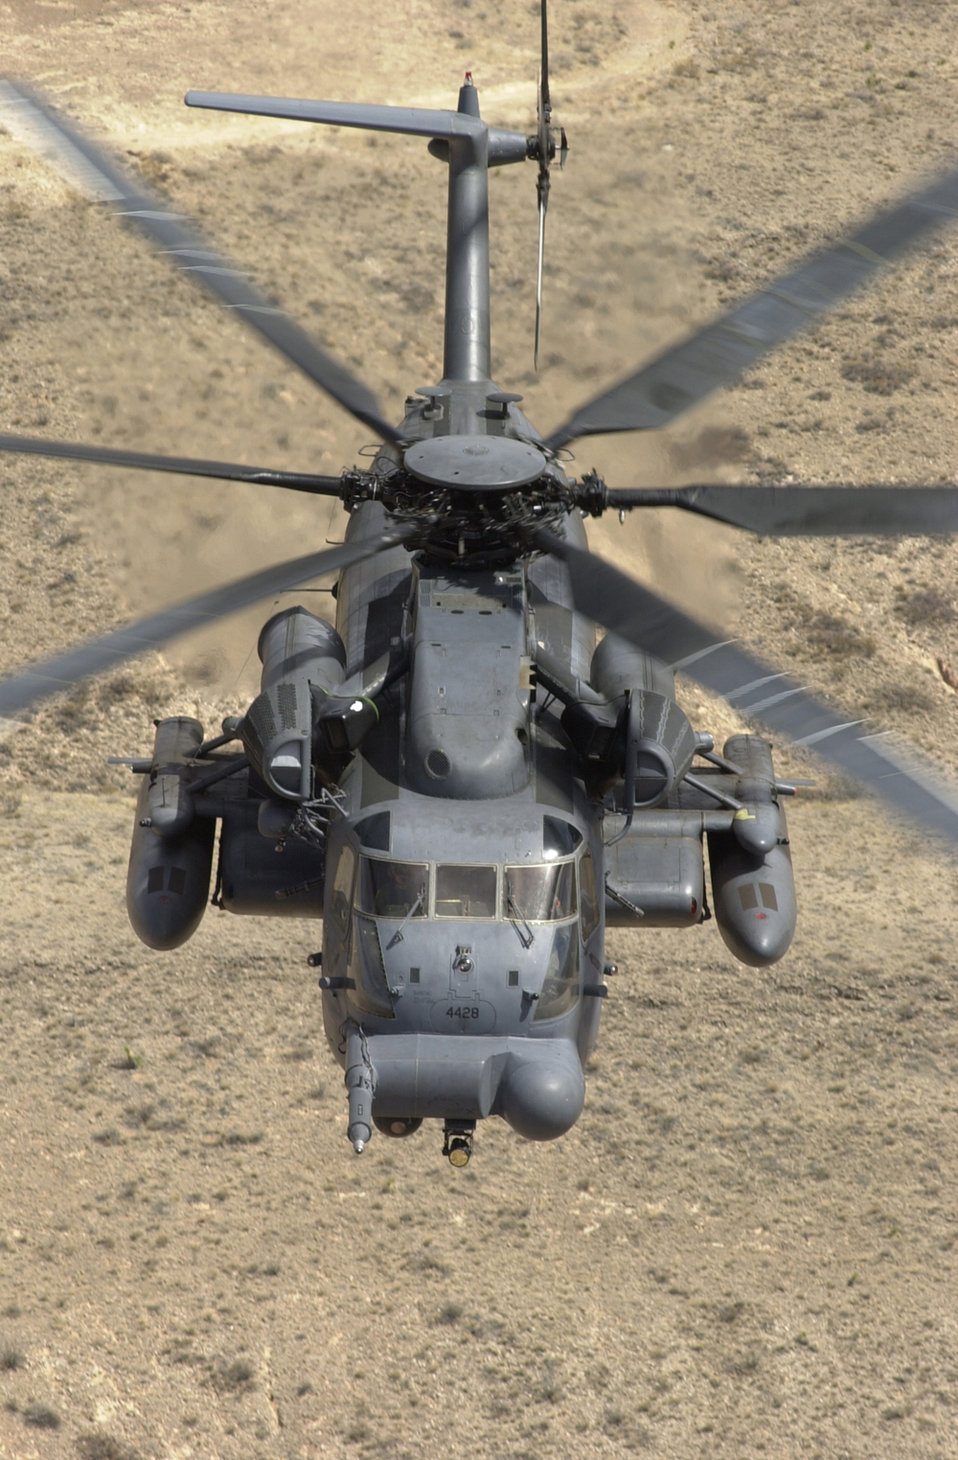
Pave Low

KIRTLAND AIR FORCE BASE, N.M. -- A 58th Special Operations Wing, 551st Special Operations Squadron, MH-53J Pave Low IIIE flies a training mission. The MH-53J's mission is to perform low-level, long-range, undetected penetration into denied areas, day or night, in adverse weather, for infiltration, exfiltration and resupply of special operations forces. The MH-53J Pave Low III heavy-lift helicopter is the largest and most powerful helicopter in the Air Force inventory, and the most technologically advanced helicopter in the world. Its terrain-following, terrain-avoidance radar and forward-looking infrared sensor, along with a projected map display, enable the crew to follow terrain contours and avoid obstacles, making low-level penetration possible.